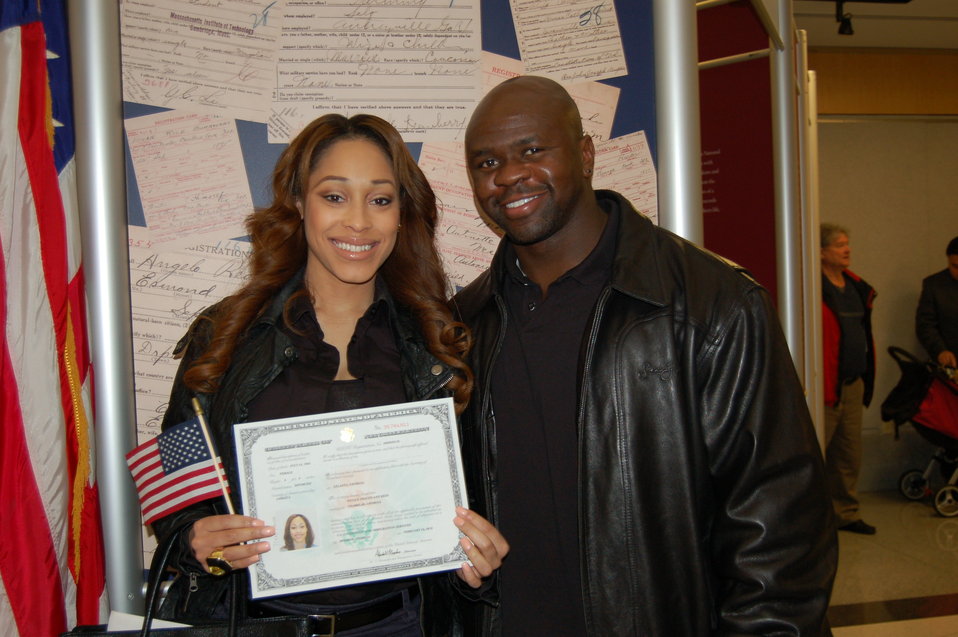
New Citizens